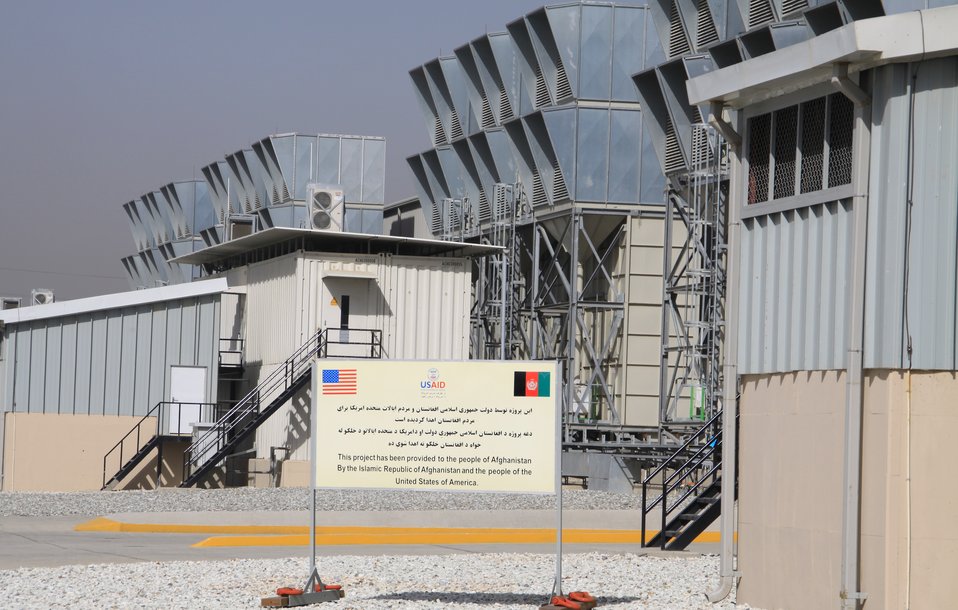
105 MW Tarakhil Power Plant Handover